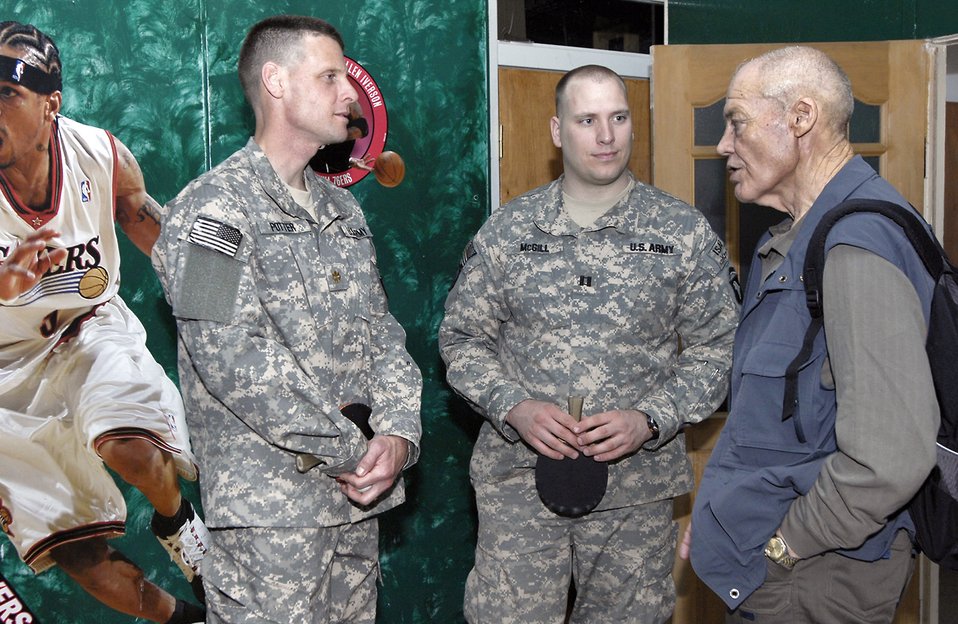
Medal of Honor recipients visit Manas Air Base

Medal of Honor recipient retired Army Col. Robert L. Howard visits with Soilders March 15 who are transiting through Manas Air Base, Kyrgyzstan. Colonel Howard received his medal from actions taken during the Vietnam War.